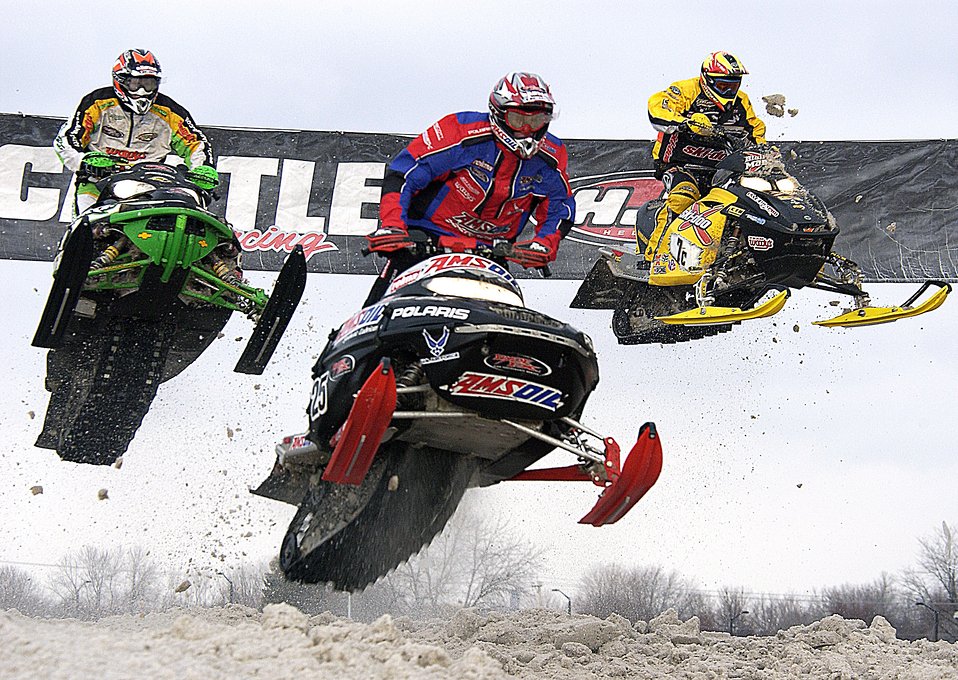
Winning 'sno' problem

GREEN BAY, Wis. -- D.J. Eckstrom (center) catches air on the finish-line hill at the Snocross Pro Stock National race at Lambeau Field here March 7. The Air Force is a secondary sponsor with the AMSOIL/Polaris Scheuring Speed Sports team. This is the third year the Air Force has been involved with the team.